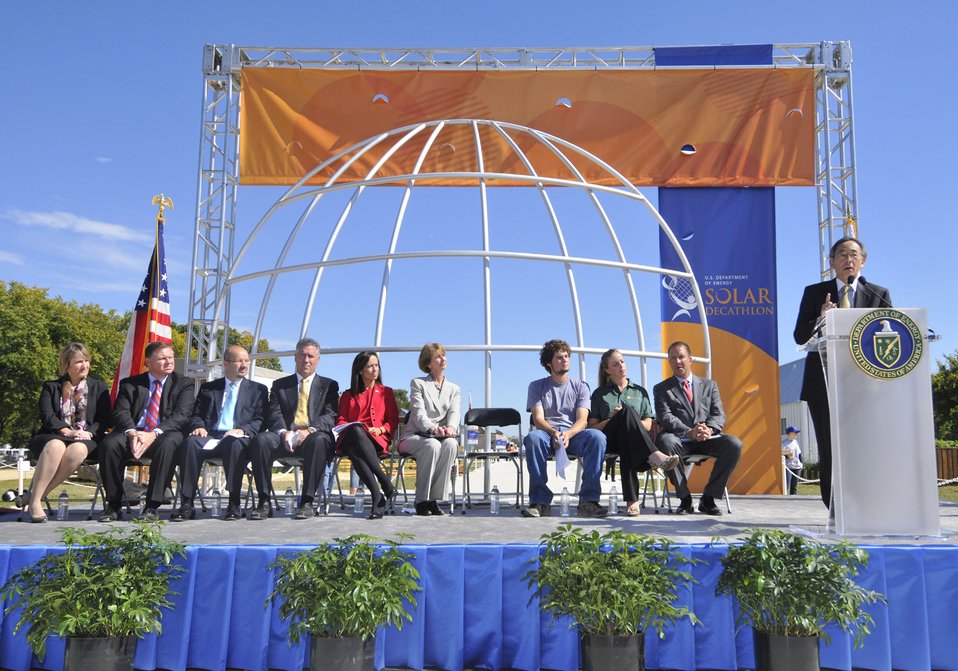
Solar Decathlon 2009 on the National Mall, with Sec. Chu

Solar Decathlon 09